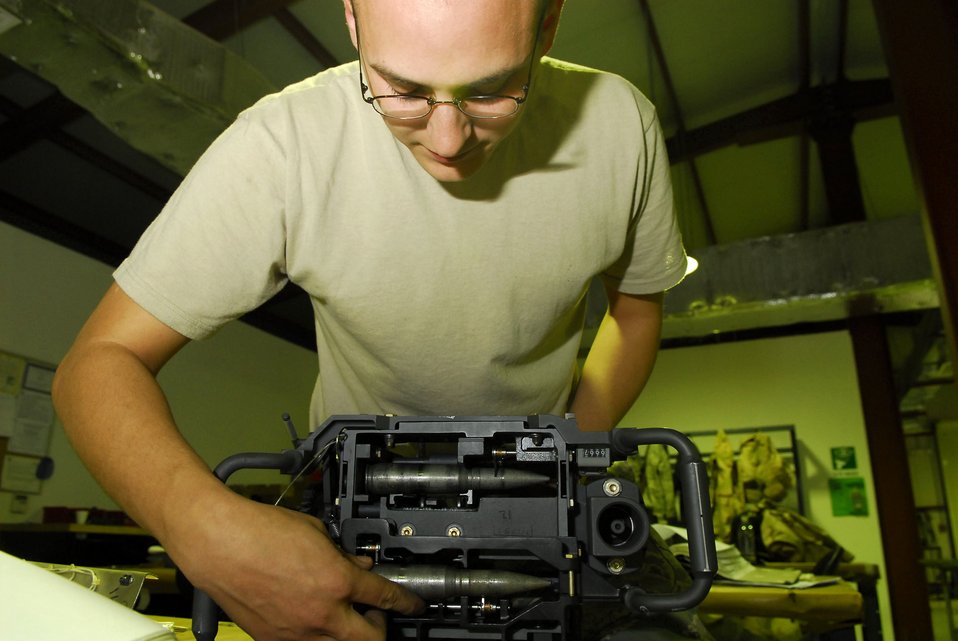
Weapons check

Senior Airman Brandon Dutton performs a round fixture test for a universal ammunition loader system Dec. 28 at Balad Air Base, Iraq. The UALS is the munitions loading interface that loads rounds into an F-16 Fighting Falcon. Airman Dutton, a 332nd Expeditionary Maintenance Squadron armament systems technician, is deployed from Luke Air Force Base, Ariz.